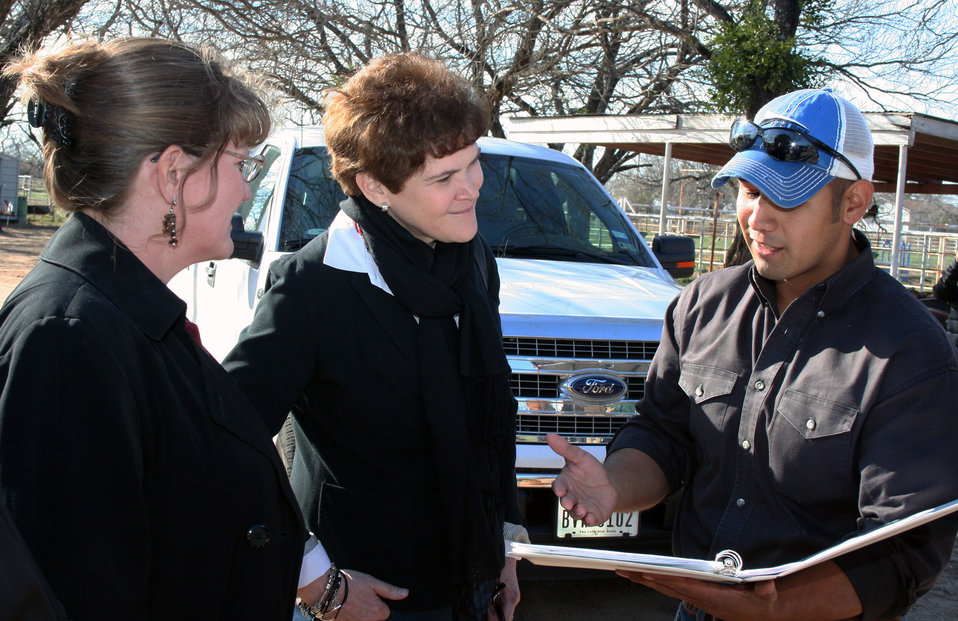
Miguel Ruiz shows Agriculture Deputy Secretary Krysta Harden and U.S. Department of Agriculture (USDA) Farm Service Agency ( FSA) Loan Manager, Raecene Randall his ranch notebook showcasing his cattle and the work he has done on the ranch in Lytle, TX, with the help of a USDA FSA operating loan on Friday, Feb. 28, 2014.